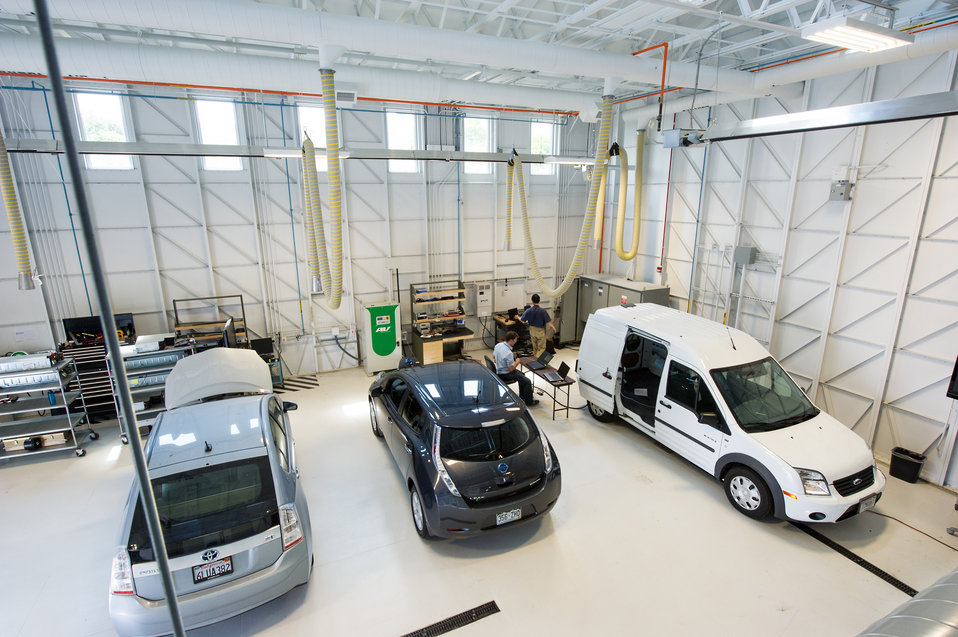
VTIF Research

July 26, 2013 - (L-R) NREL intern Josh Crowley and NREL engineer Myungsoo Jun, run an experiment at the Vehicle Testing and Integration Facility (VTIF). The experiment is attempting to maximize solar power generation for the fast charging of an electric vehicle (Gray Nissan Leaf) from a solar PV source. The battery in the Ford Transit (white van) acts as a stationary battery, simulating the utility grid load and providing additional power or storing excess power as needed to fast charge the EV.